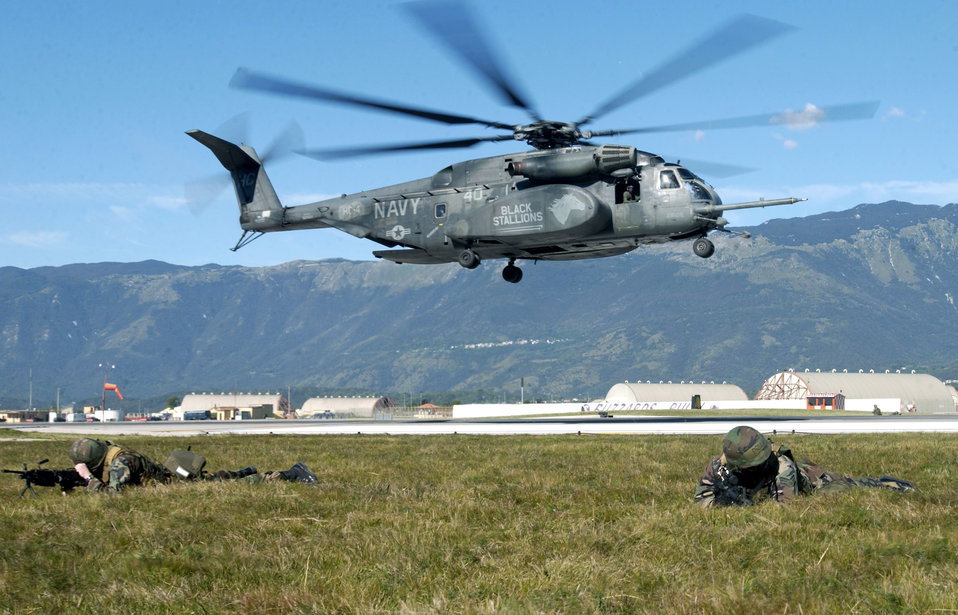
Joint training

AVIANO AIR BASE, Italy -- Airmen with the 31st Security Forces Squadron and Italian carabinieri (state police) provide perimeter security for a U.S. Navy's MH-53E Sea Dragon during joint helicopter deployment training here recently.